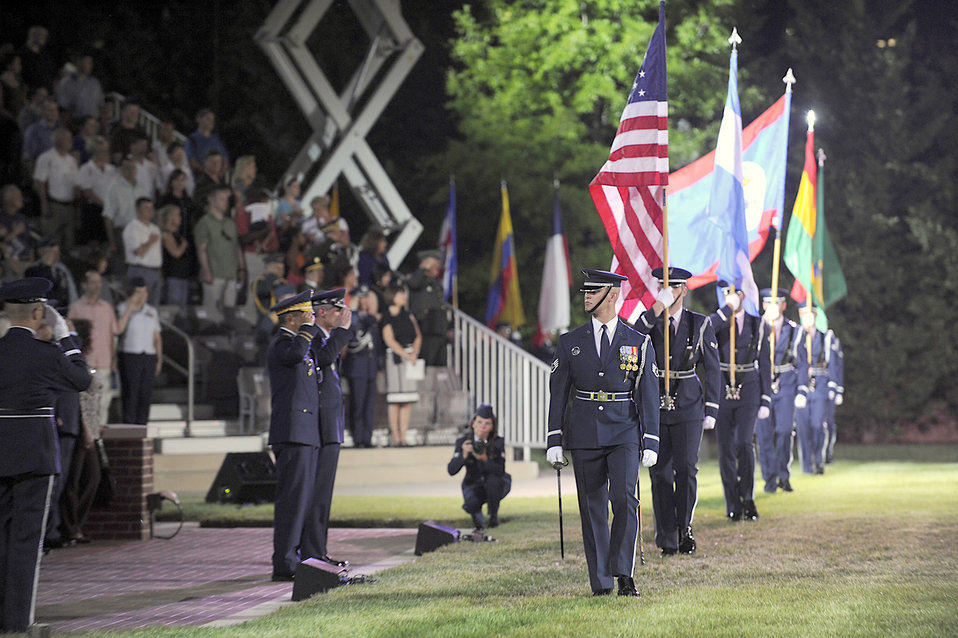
CONJEFAMER

The Honor Guard performs a pass and review for Maj. Gen. Carlos Altuna, the Dominican air force chief of staff, and U.S. Air Force Chief of Staff Gen. Norton Schwartz June 13,2010, at the ceremonial lawn on Bolling Air Force Base, Washington, D.C., during a special tattoo in honor of those attending the